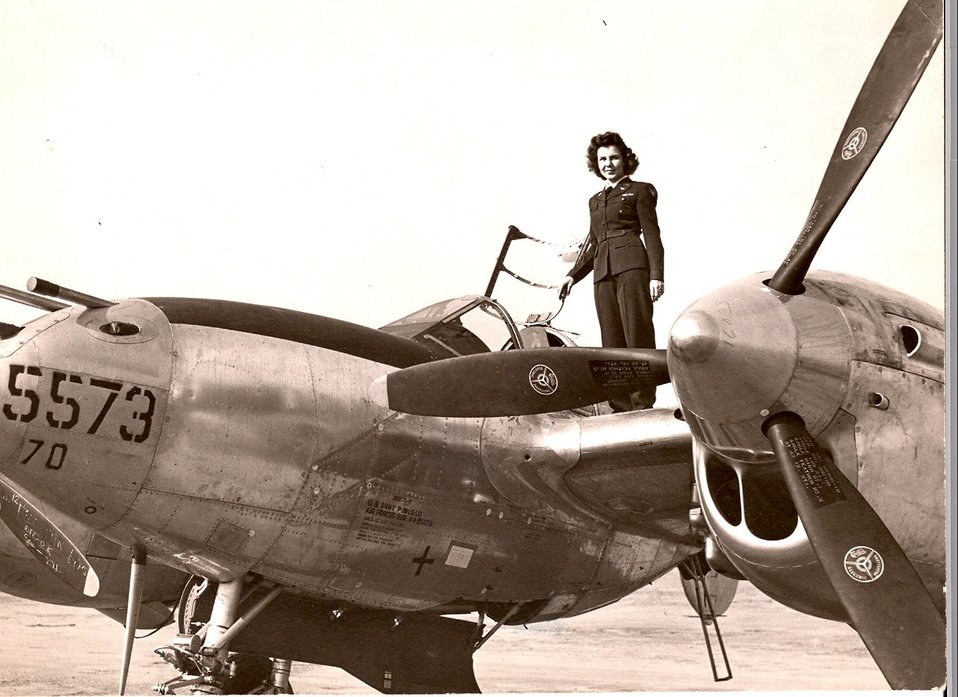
Female pioneers of military aviation gather at McChord

Dorothy Olsen, seen on a P-38 Lightning, during her time with the Women Airforce Service Pilots.